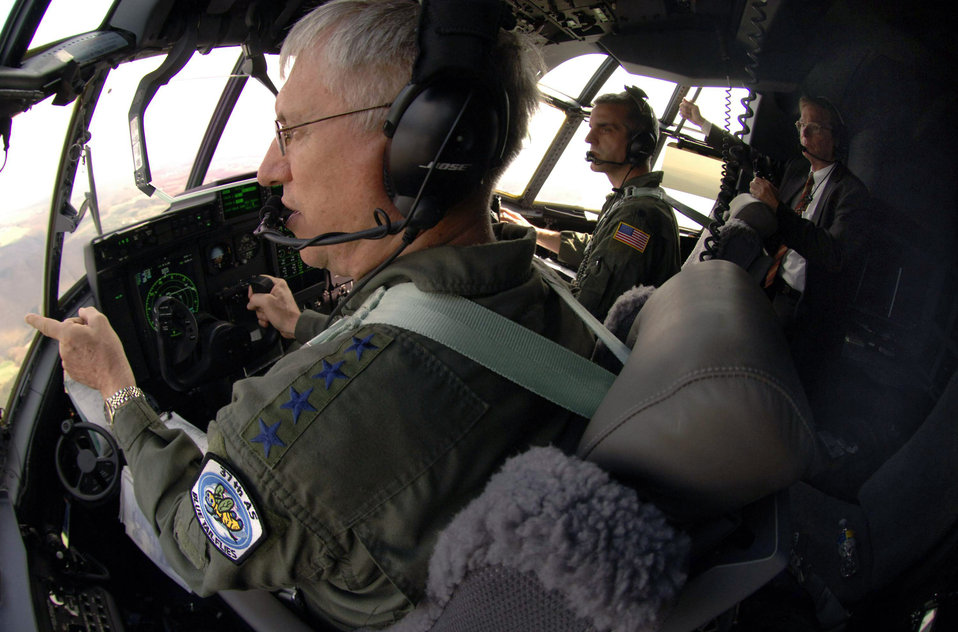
Ramstein welcomes new J-model C-130

Gen. Roger A. Brady, U.S. Air Forces in Europe commander, and Lt. Col. Craig Williams fly a new C-130J Super Hercules from Spangdahlem Air Base, Germany, to its new home station at Ramstein AB, Germany, as the USAFE host-nation advisor Dick Motz looks on. This J-model is the first of 14 aircraft that are scheduled to arrive at Ramstein over the next 12 months to replace the older E-models there.